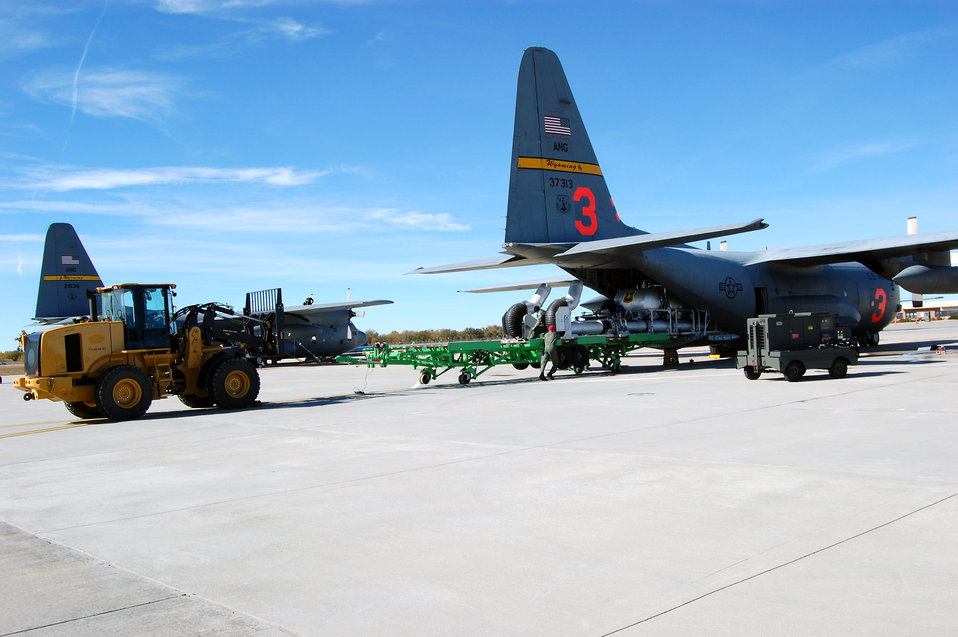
Herculean support for California fires

Airmen from the Wyoming Air National Guard load the Modular Airborne Fire Fighting System onto a Wyoming Air National Guard C-130 Hercules Oct. 23 in Cheyenne, Wyo. The C-130 is being deployed to California to assist with firefighting efforts. Fires have ravaged Southern California forcing more than 500,000 people from their homes as the president has declared a federal emergency for seven counties in the state. The orange number on the tail identifies the plane as one of the units using the Modular Airborne Fire Fighting System to battle the blaze.